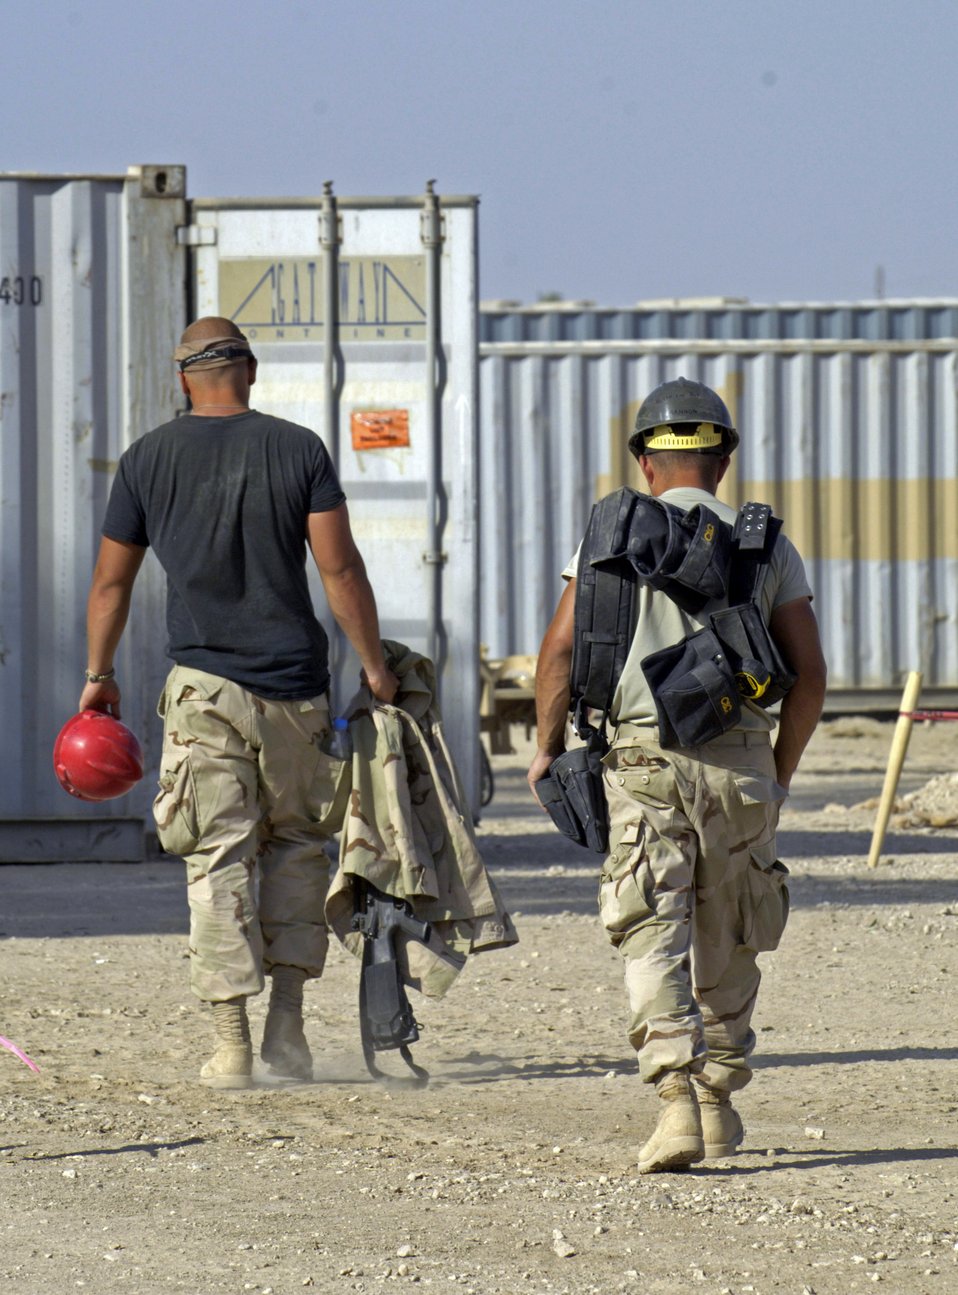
RED HORSE Airmen support Army in southern Baghdad

Senior Airman Albert Turner and another Airman carry their tools to their compound after a day of laying roofing material on the first of four tactical operations centers June 22 at Forward Operating Base Kalsu, Iraq. Airman Turner is a structural journeyman with the 557th Expeditionary Red Horse Squadron deployed from the 49th Civil Engineering Squadron at Holliman Air Force Base, N.M. He and his fellow Rapid Engineer Deployable Heavy Operational Repair Squadron Engineers, or RED HORSE, Airmen are forward deployed from Balad Air Base, Iraq, to build four tactical operations centers for the Army's 2nd Brigade combat team, 3rd Infantry Division headquartered here. The 2/3 ID is currently running operations out of tents. The RED HORSE unit, made up of Air Guard, Reserve and active-duty Airmen, was requested by the Army to come into this